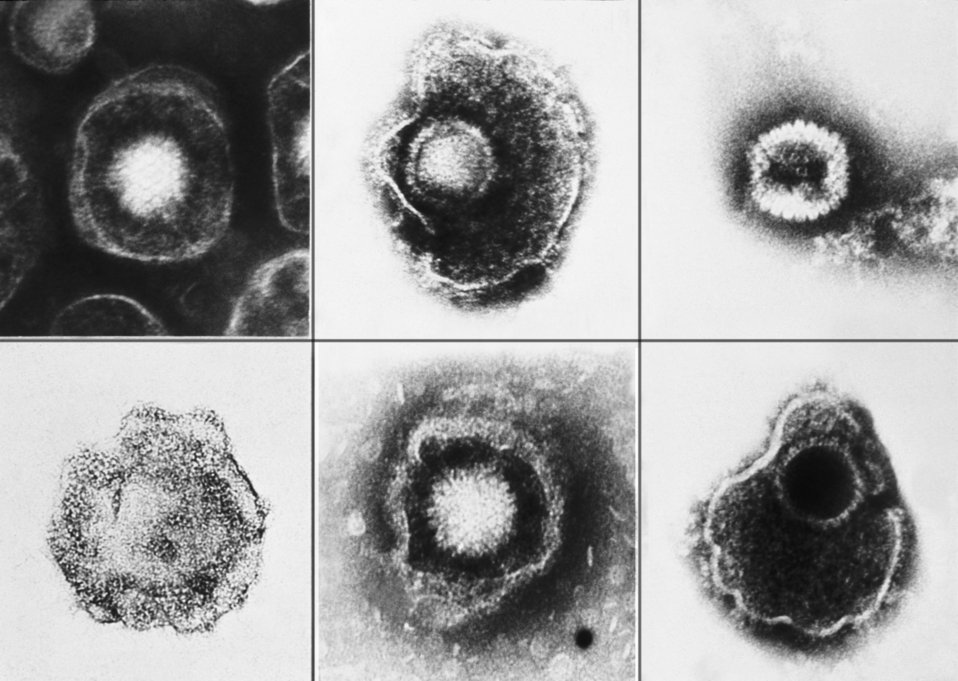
Various viruses from the Herpesviridae family seen using an electron micrograph